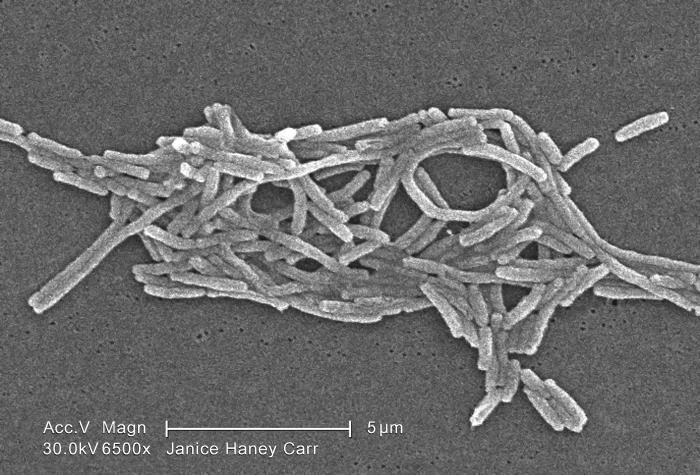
Under a moderately-high magnification of 6500X, this scanning electron micrograph (SEM) depicted a grouping of Gram-negative Legionella pneumophila bacteria. Please see PHIL 11092 through 11160 for additional SEMs of these organisms, specifically PHIL 11122 for a colorized version of this image. In some of these views you'll note the presence of flagellar appendages.